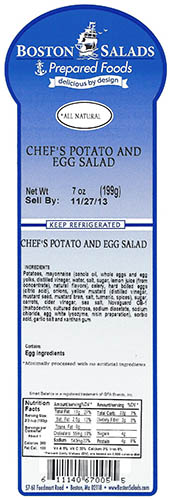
RECALLED – Prepared salads

October 24, 2013 – Product Recall – Boston Salads and Prepared Foods Recalling Ready-To-Eat Products Because of Possible Health Risk.